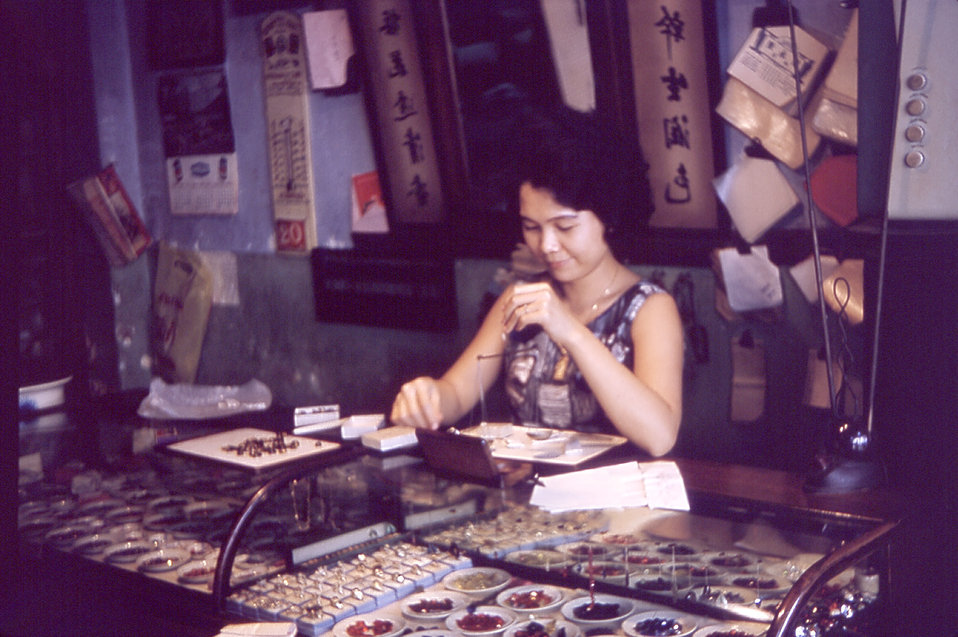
This 1964 image depicts an attendant assisting a customer in the purchase of star sapphires in Bangkok, Thailand.